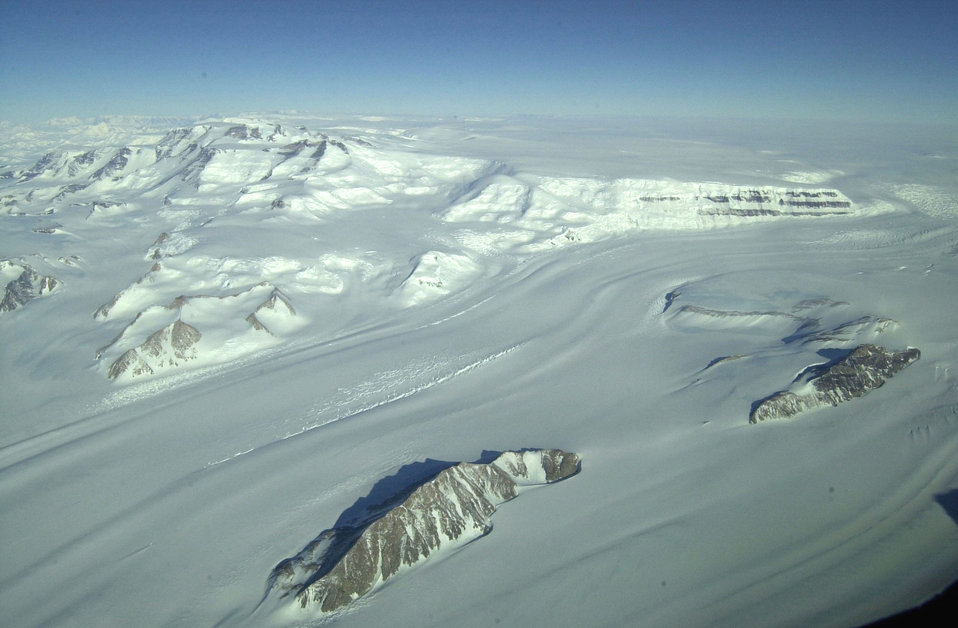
Air Guard retraces first flight to South Pole

ANTARCTICA -- June and McKinley Nunataks on Antartica's Liv Glacier were named by Rear Adm. Richard E. Byrd for Harold June, his co-pilot, and Ashley McKinley, his mapper during the team's historic first flight to the South Pole 75 years ago.